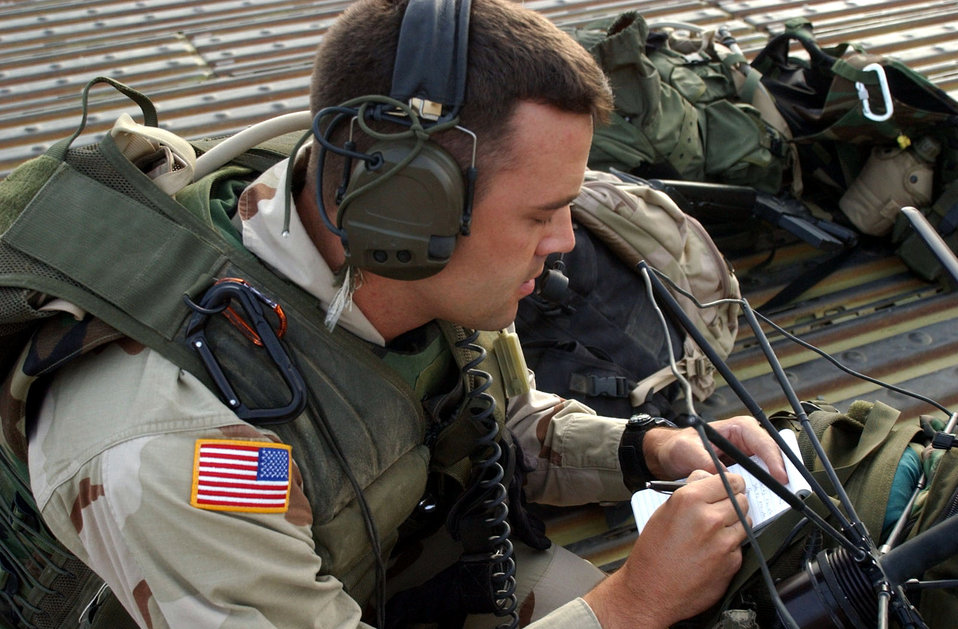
Testing 1...2...3...

OPERATION ENDURING FREEDOM -- Capt. Danny Stout, an air liaison officer deployed with the Army's 2-505 Parachute Infantry Regiment of the 82nd Airborne Division, tests his radio before taking part in an air assault into a hostile area in the mountains of Afghanistan. Stout, a B-52 Stratofortress pilot, is serving a two-year tour with the Army, calling in close-air support missions against enemy troops.